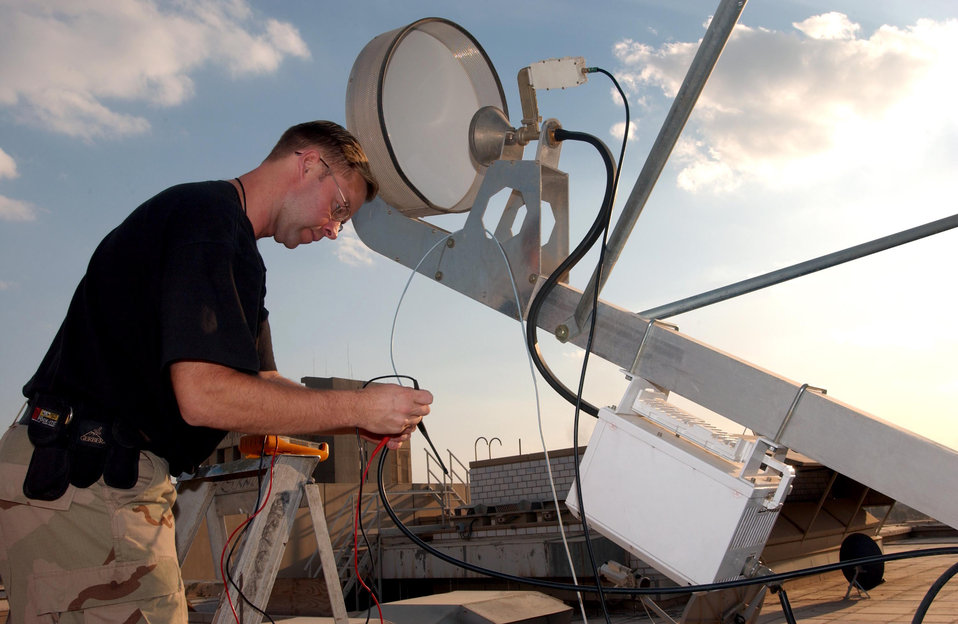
Opening the lines of communication

BAGHDAD, Iraq -- Tech. Sgt. Paul Hendrix tests the strength of the satellite signal here Feb. 3. This satellite system is a satellite hub which receives combat camera imagery from field units throughout Iraq. Sergeant Hendrix is a video intrusion detection system technician deployed from Charleston Air Force Base, S.C.